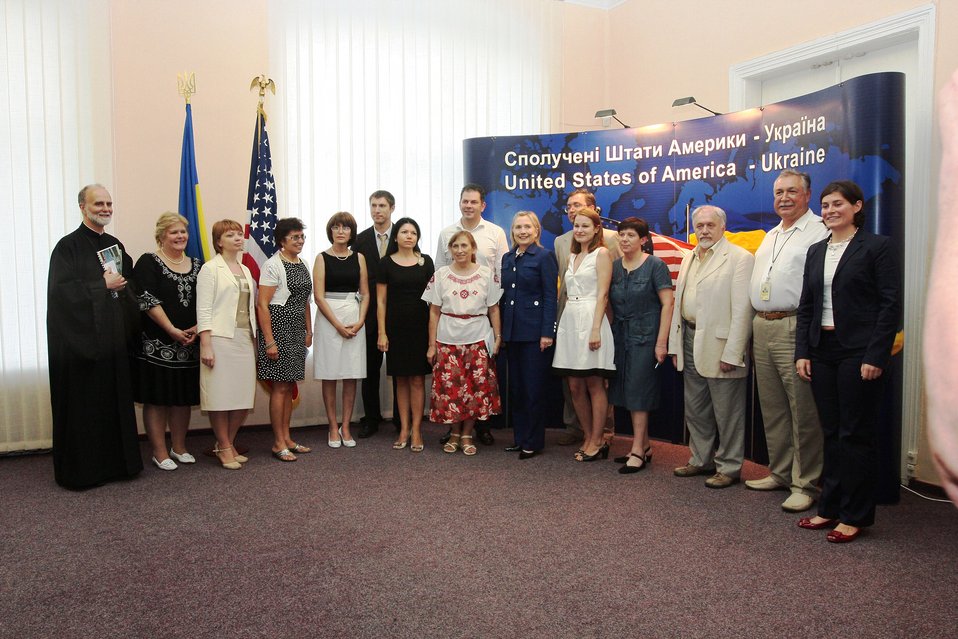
Secretary Clinton Meets With Members of Civil Society and NGO Representatives in Ukraine

U.S. Secretary of State Hillary Rodham Clinton meets with Ukrainian members of civil society and NGO representatives in Kyiv, Ukraine, on July 2, 2010.